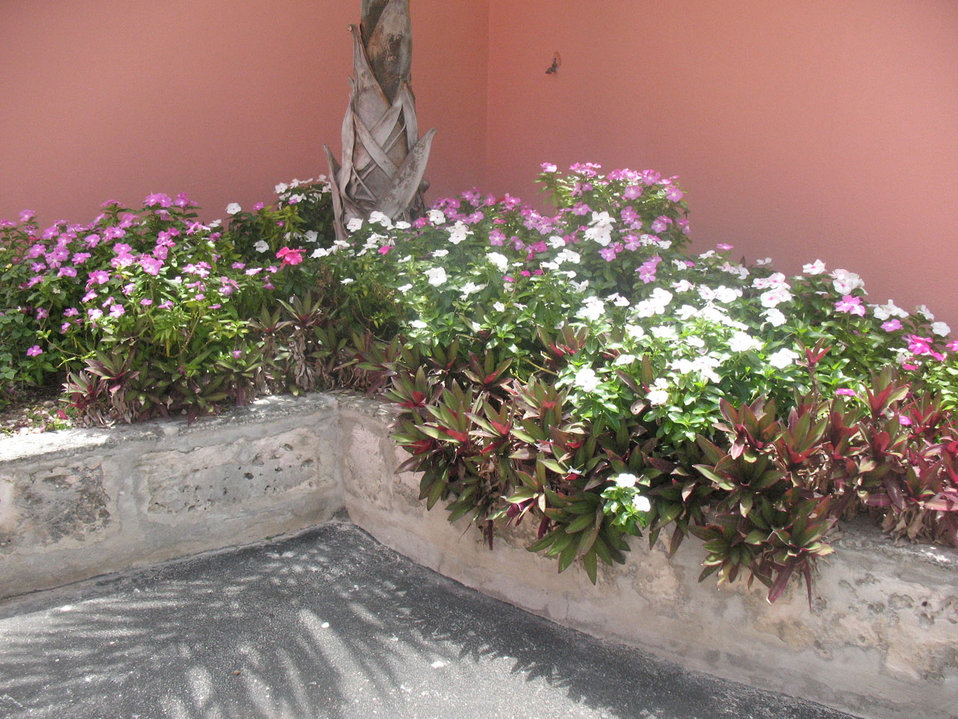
Beautiful bermuda

Flower patch on resort.